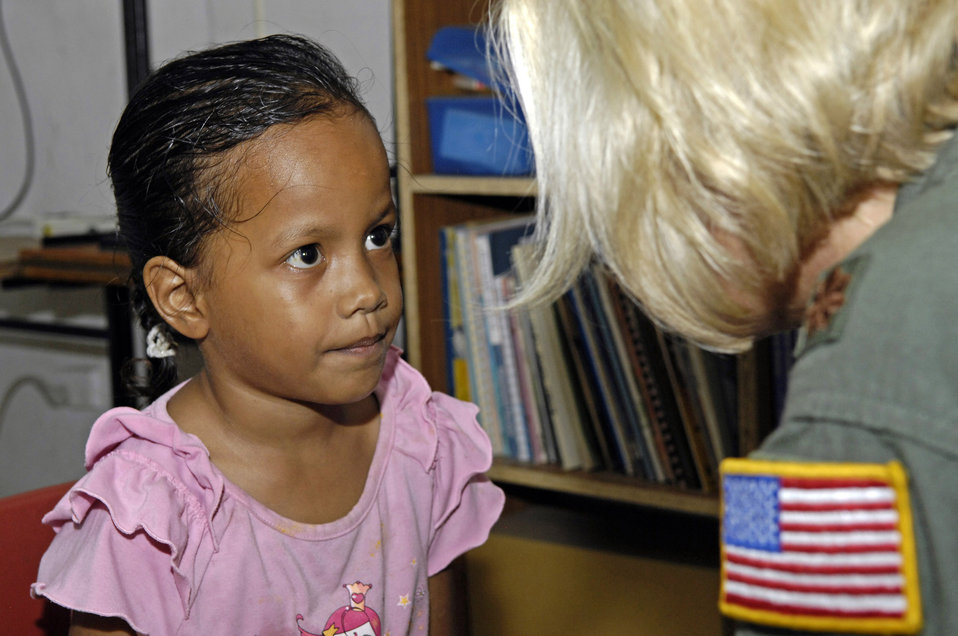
Joint team works to improve care in Nauru

Maj. C.J. Newhouse talks with a first grader while conducting a basic hearing test July 21 on the island of Nauru. Major Newhouse is part of a 12-person, joint-force U.S. Pacific Command team deployed to Nauru to provide medical training and assistance to the island's medical professionals. Major Newhouse is a Reserve flight nurse with the 446th Aeromedical Evacuation Squadron from McChord Air Force Base, Wash.